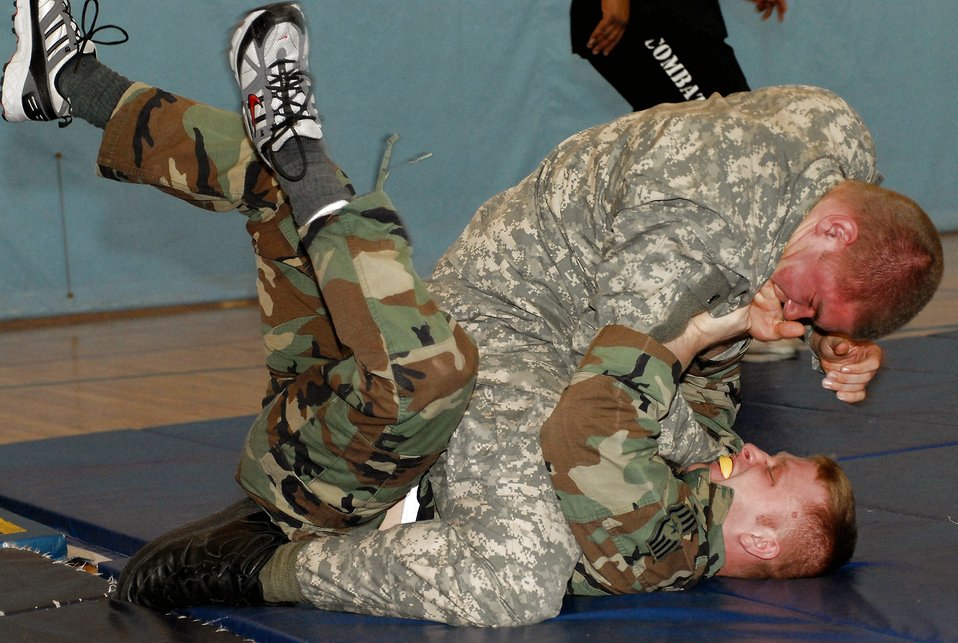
Airmen, Soldiers fight

Senior Airman Michael Brooks and Army Pvt. John Carduff engage in hand-to-hand combat Feb. 14 at Kunsan Air Base, South Korea. This training is part of the Army warrior ethos. The training is now offered to Airmen here to enhance mission effectiveness between the two services. Air Force officials are currently working on a service specific hand-to-hand combat training for all Airmen. Currently, the Air Force's Officer Training School has implemented a new close-combat course into its curriculum. Airman Brooks is assigned to the 8th Maintenance Squadron and Private Carduff is with the 144th Charlie Company Air and Missile Defense unit.